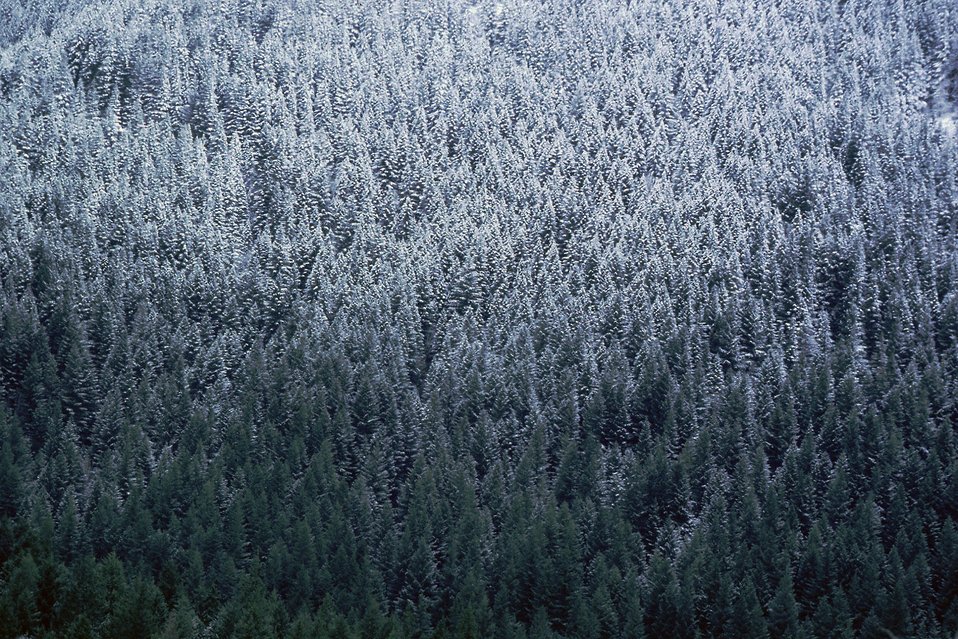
Mid Winter forest scene in the Mollala Corridor.